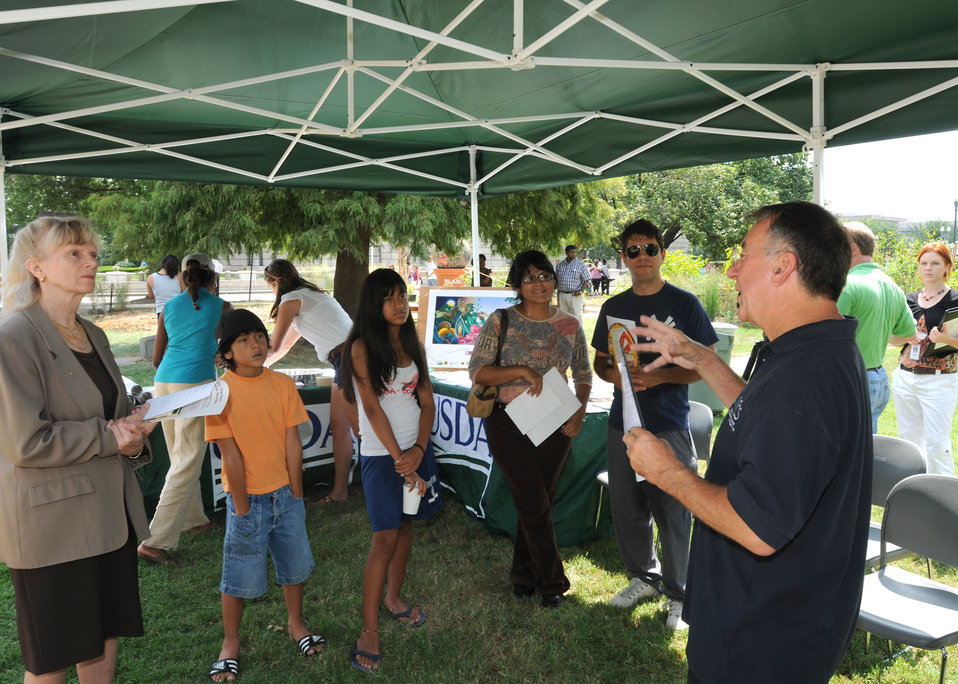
USDA employee volunteers in the People's Garden by leading a Healthy Garden Workshop.